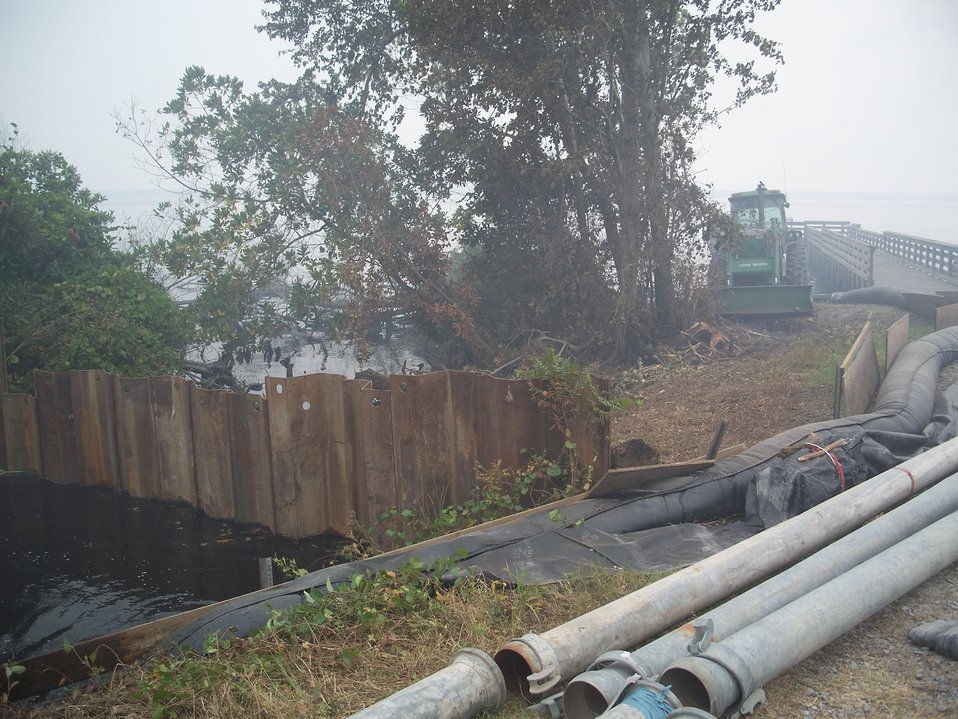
Prepare to flood

Suffolk, VA, August 2011: A dam on Interior Ditch keeps water pumped from Lake Drummond (background) from flowing back to the lake. Water in the flooded ditch will be pumped on the peat fire burning in the Lateral West Fire on Great Dismal Swamp National Wildlife Refuge.